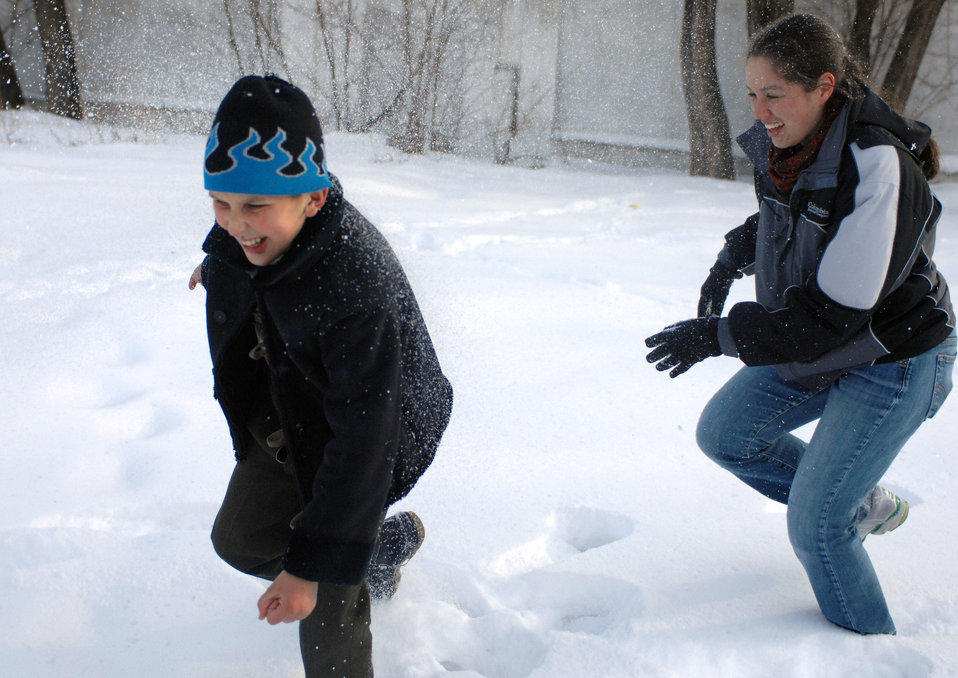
Manas Airmen make memorable bonds with Kyrgyz children

Capt. Rochelle Smith and a young boy play a friendly game of snow tag Jan. 11 at the Belovodosky orphanage north of Bishkek, Kyrgyzstan. Airmen from nearby Manas Air Base visit the orphanage frequently to share friendship and donate toys as well as clothing, blankets, diapers and toiletries. Captain Smith is deployed with the 376th Expeditionary Contracting Squadron.